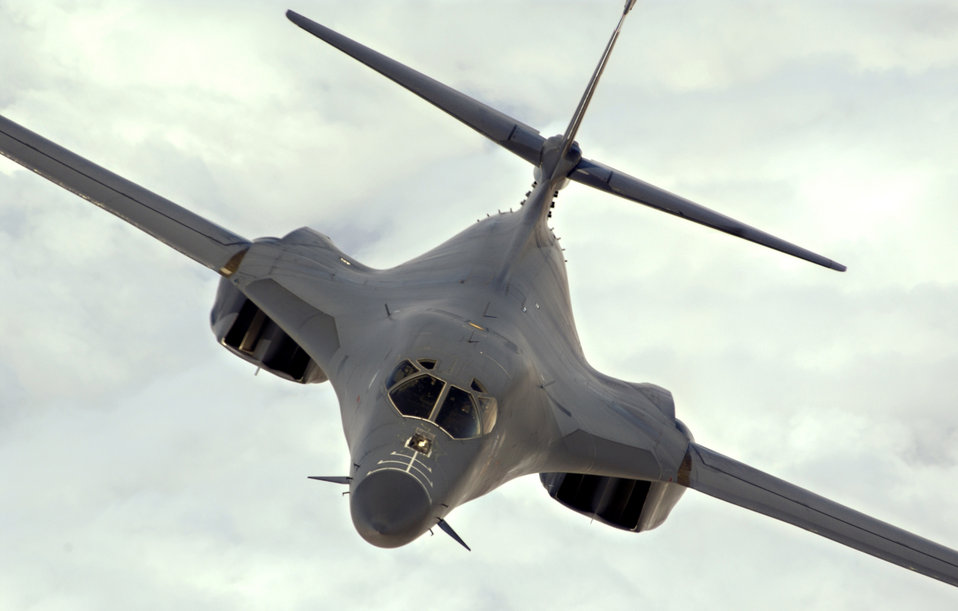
CENTAF Airpower Summary for Feb. 13, 2007

B-1B Lancers, like this one, provide close-air support for troops on the ground in Afghanistan. Carrying the largest payload of both guided and unguided weapons in the Air Force inventory, the multi-mission Lancer is the backbone of America's long-range bomber force. It can rapidly deliver massive quantities of precision and non-precision weapons against any adversary, anywhere in the world, at any time.